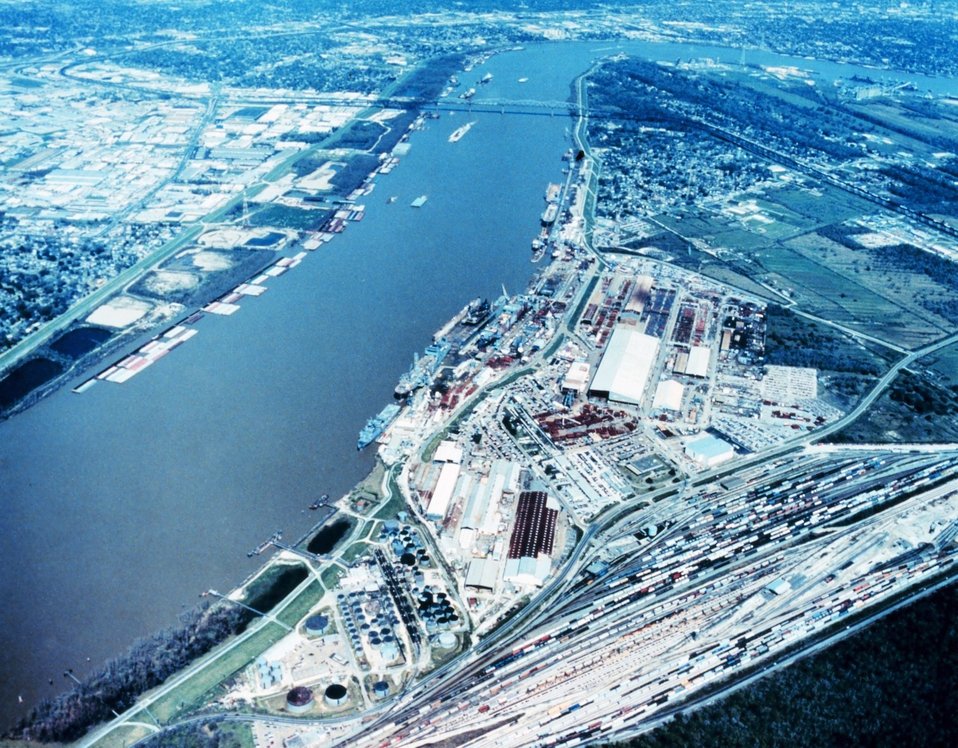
2955 North Latitude 9012 West Longitude.